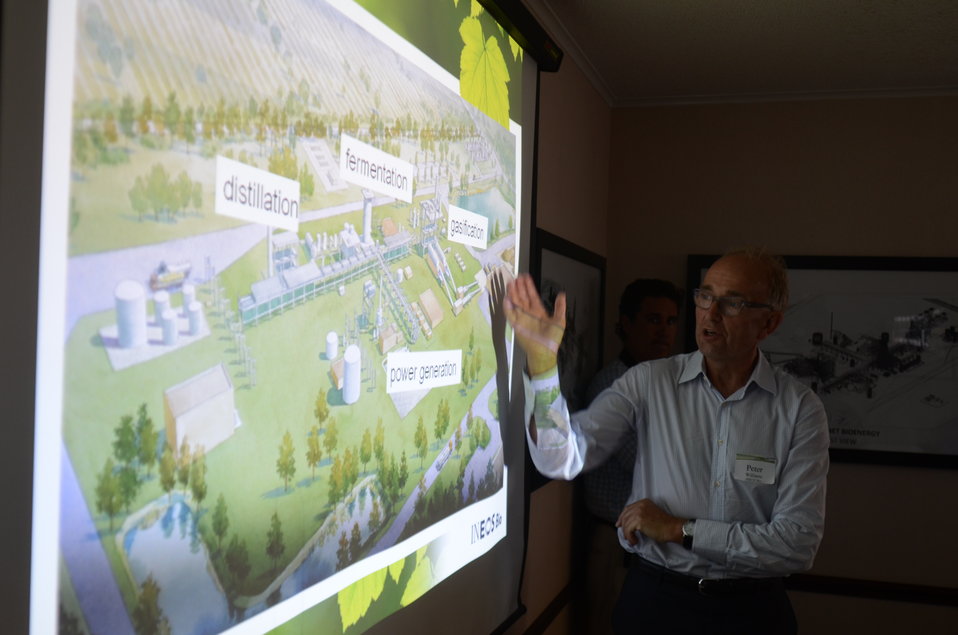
INEOS representative explains the waste-to-energy INEOS bioprocessing facility to Agriculture Secretary Tom Vilsack in Florida, on Thursday, Aug. 11, 2011. The INEOS New Planed BioEnergy facility in Vero Beach, Florida, was granted a conditional Agriculture loan guarantee earlier this year to help build and operate a biorefinery capable of producing 8 million gallons per year of cellulosic ethanol and 6 megawatts of electricity.